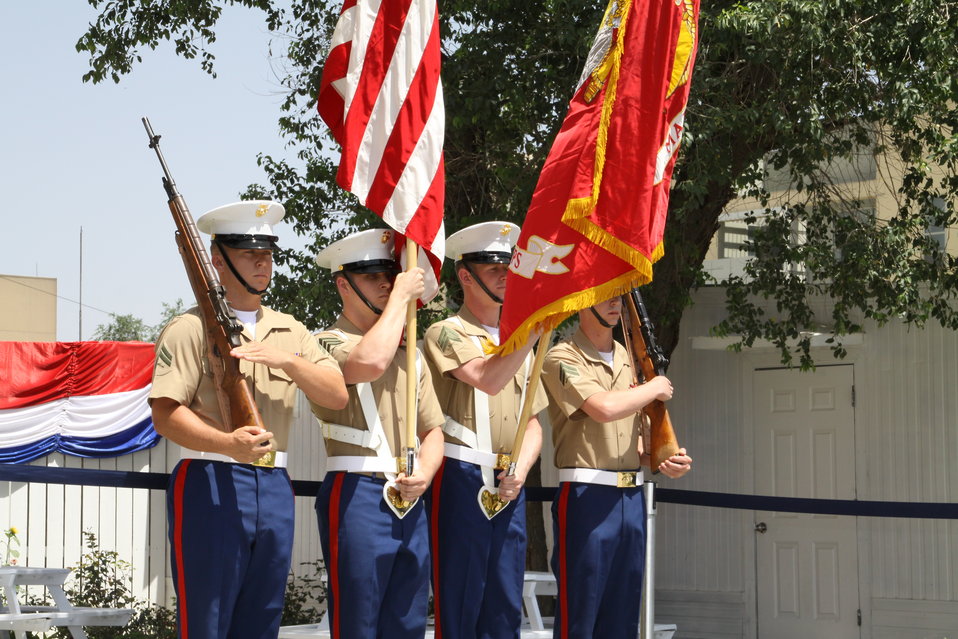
Kabul Official July 4th Celebration